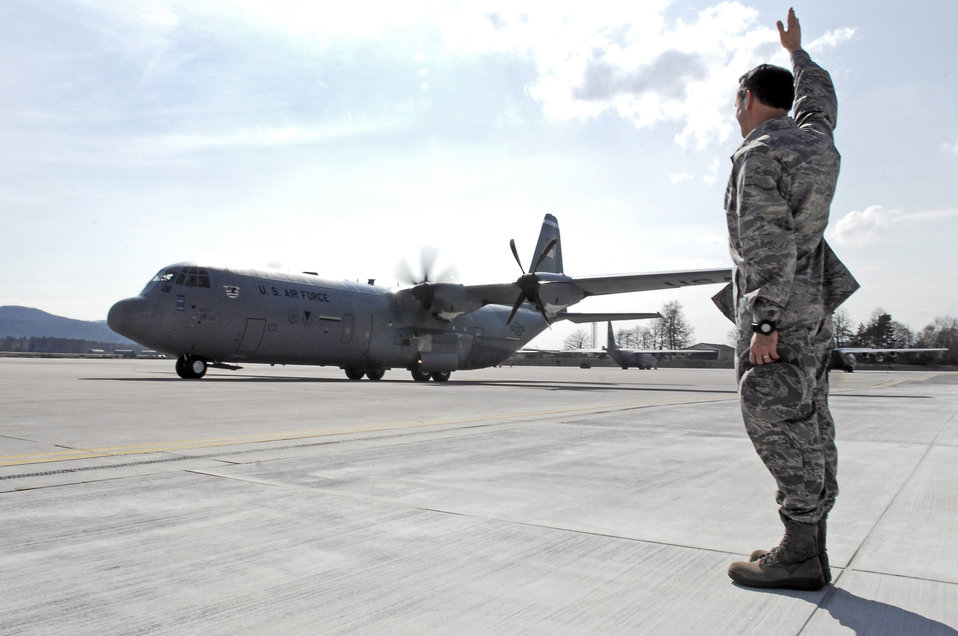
Ramstein welcomes new J-model C-130

Col. Donald Bacon, 435th Air Base Wing commander at Ramstein Air Base, Germany, helps marshal the first C-130J Super Hercules to be stationed there during an arrival ceremony, April 7. The aircraft's owning unit, the 86th Airlift Wing, celebrated not only the arrival of the J-model during the ceremony, but also a new era in operations for the wing. This aircraft is the first of 14 J-models that are scheduled to arrive over the next 12 months to replace the older E-model Hercules stationed there.